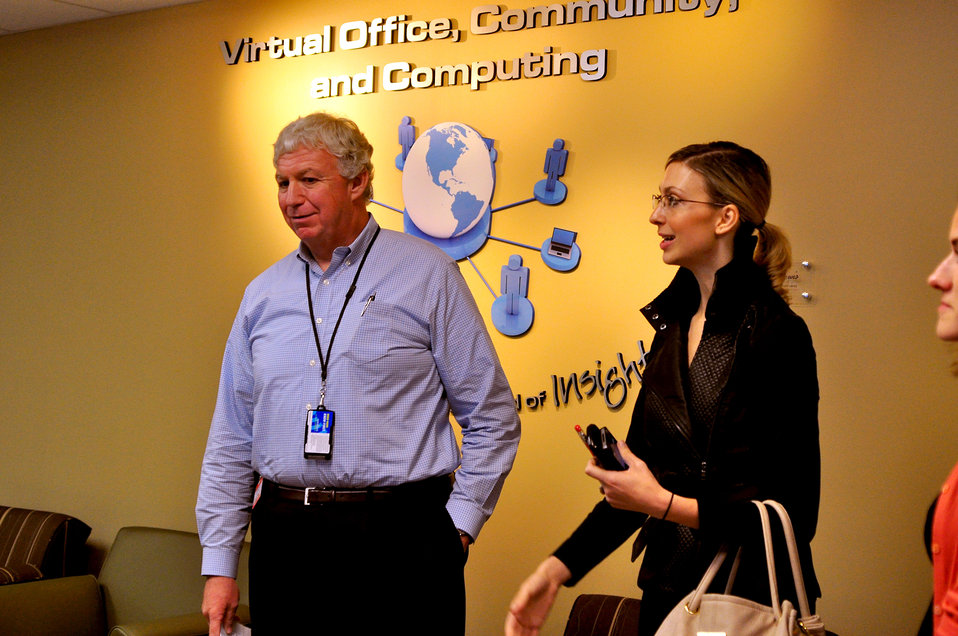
Richard Serino Deputy Administrator, FEMA and Desiree Matel-Anderson Chief Innovation Advisor, FEMA Visit to Oak Ridge 2013

13-116-116 DOE photo Lynn Freeny 9-26-2013 Oak Ridge Tennessee